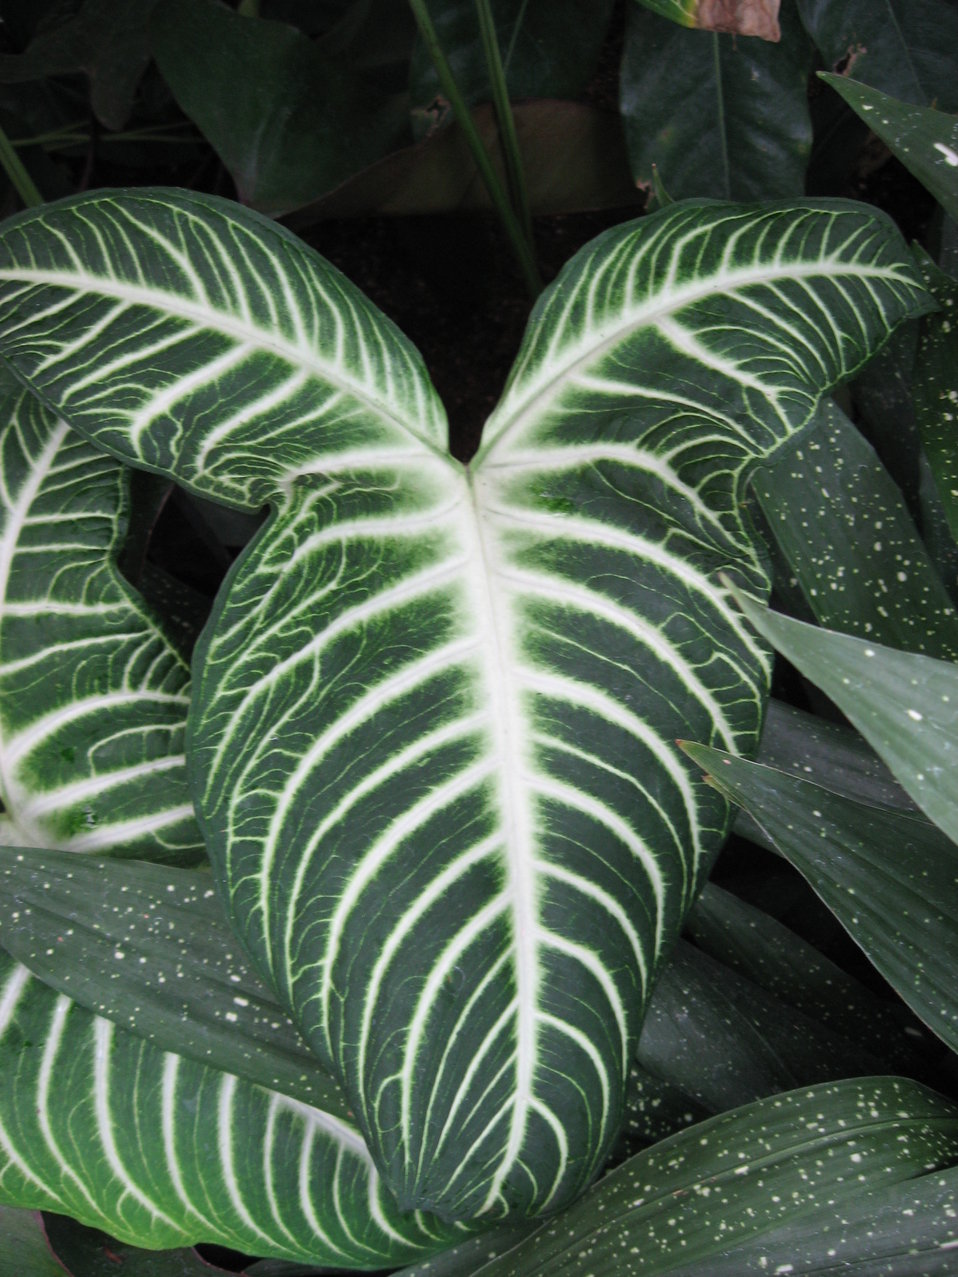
A picture of Caladium lindenii.